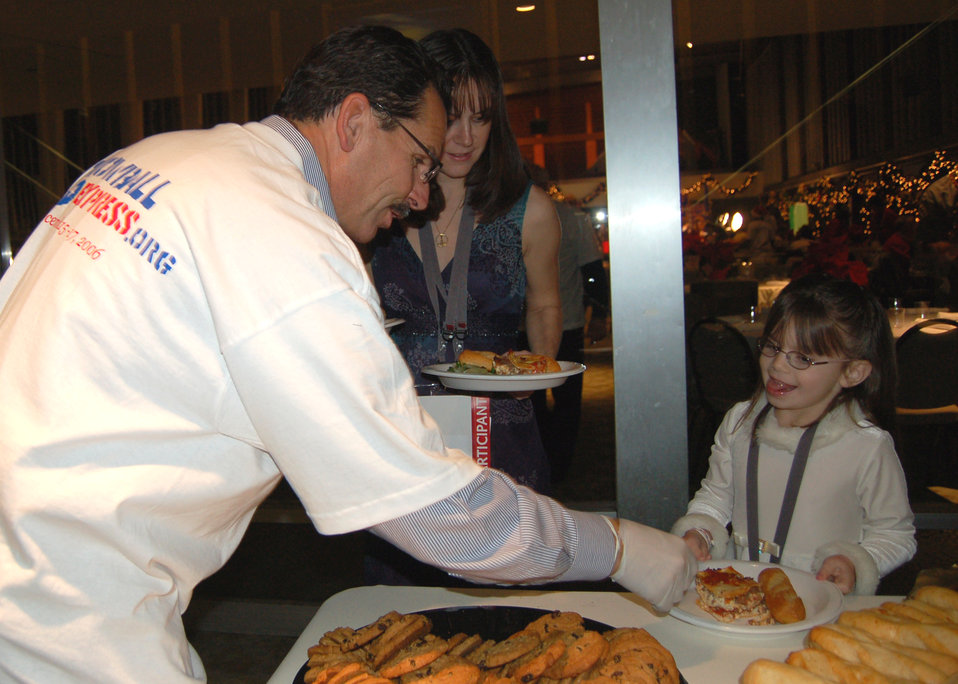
Snowball Express

Dave Rudat, a Snowball Express volunteer, hands a cookie to Lauren Stubenhofer as her mom Lauren looks on Dec. 15 at the Crystal Cathedral. The dinner was the first activity of the four-day event. The Snowball Express includes a trip to Disneyland and tickets to an Anaheim Ducks game.